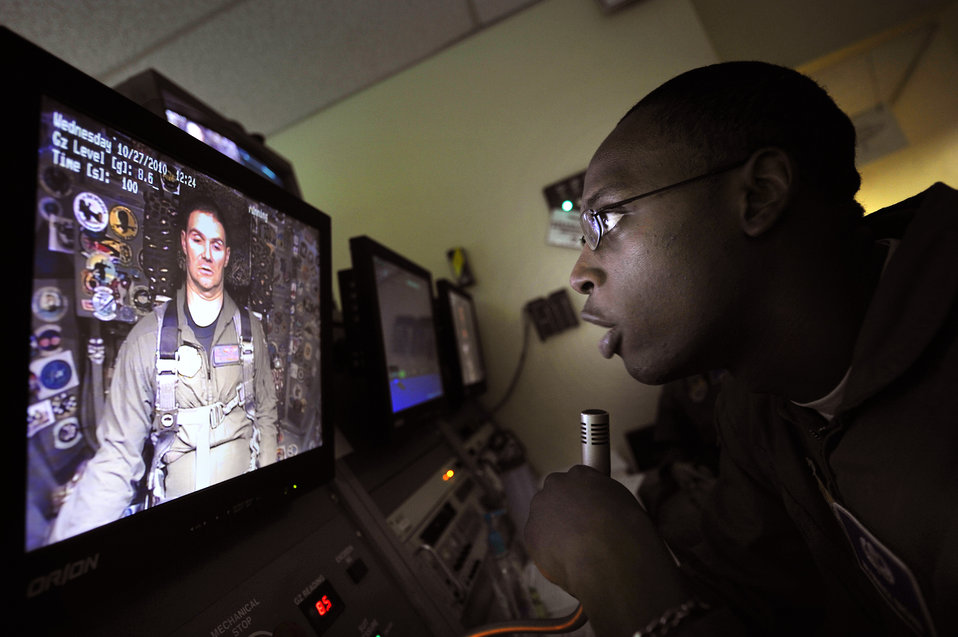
Centrifuge takes last spin

Members of the Physiological Training Center concluded 22 years of centrifuge training with its final spin Oct. 27, 2010, at Holloman Air Force Base, N.M. Operated by the U.S. Air Force School of Aerospace Medicine, the centrifuge was used as a training device to expose pilots to a high level of G-forces -- a measurement of an object's acceleration -- which aircrews encounter in high-performance aircraft. Upon its last spin, Holloman's centrifuge had been used to train nearly 32,000 students, including service members from all branches, North Atlantic Treaty Organization troops and members of allied forces.